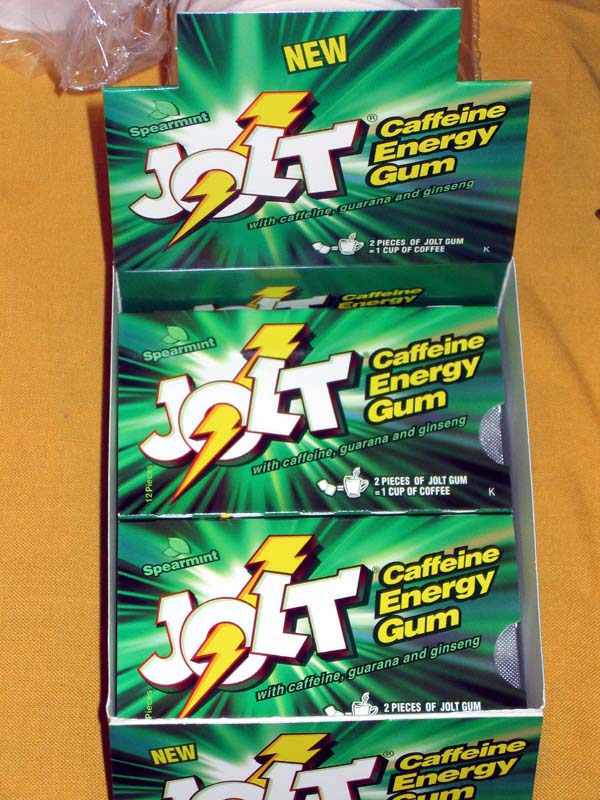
High energy Jolt

FILE PHOTO -- Two pieces of the new